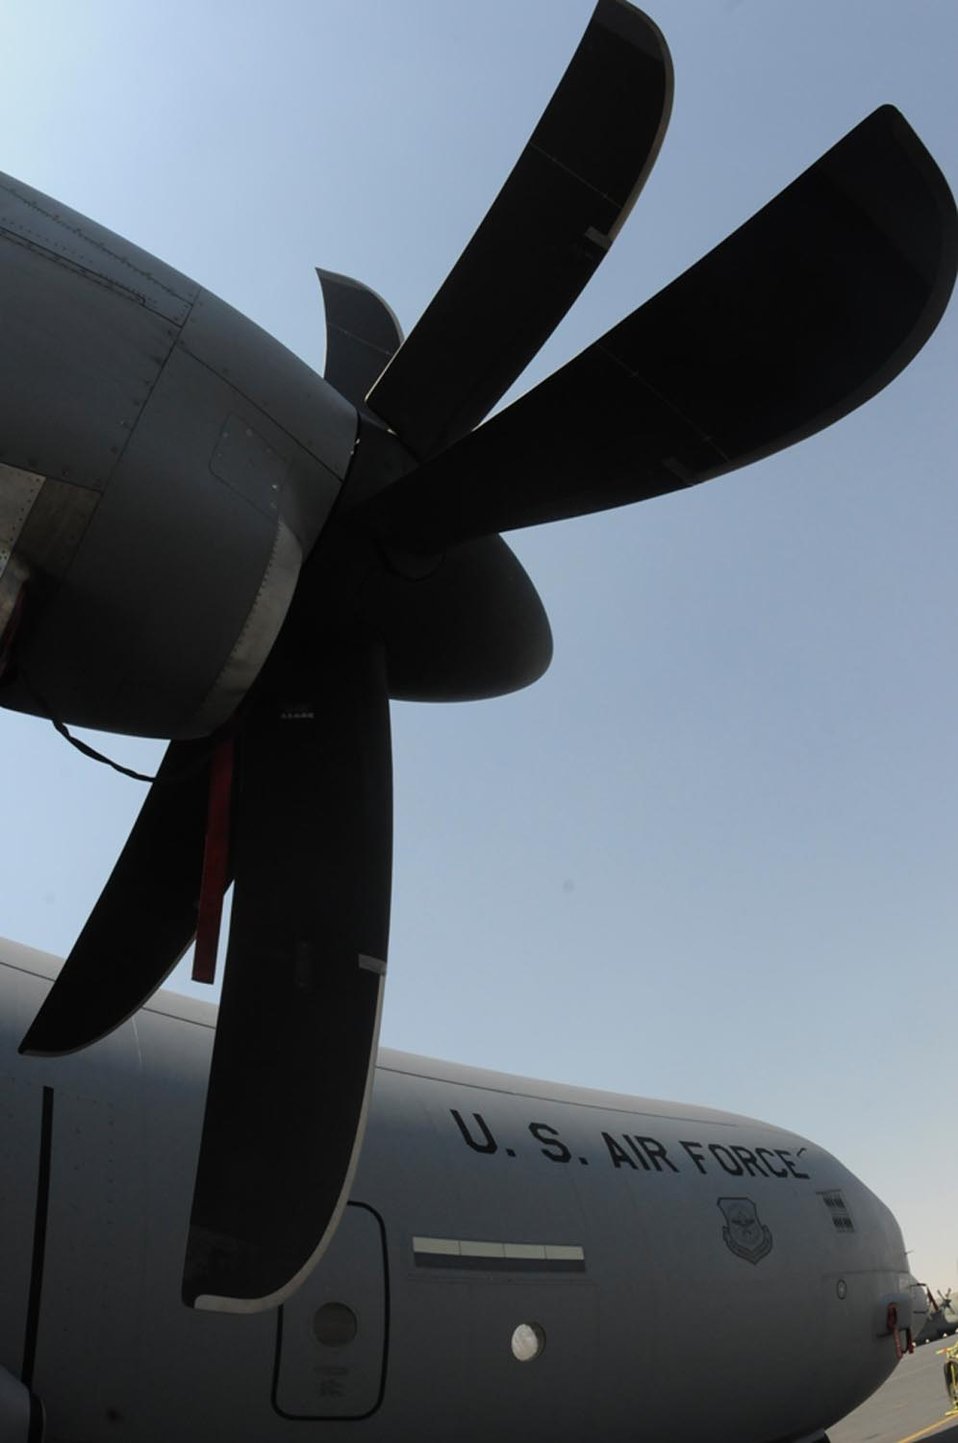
C-130J deploys to Southwest Asia

A C-130J Hercules sits on the flightline after arriving to the 379th Air Expeditionary Wing Feb. 8 at a Southwest Asia air base. The C-130J is from the 41st Airlift Squadron from Little Rock Air Force Base, Ark.